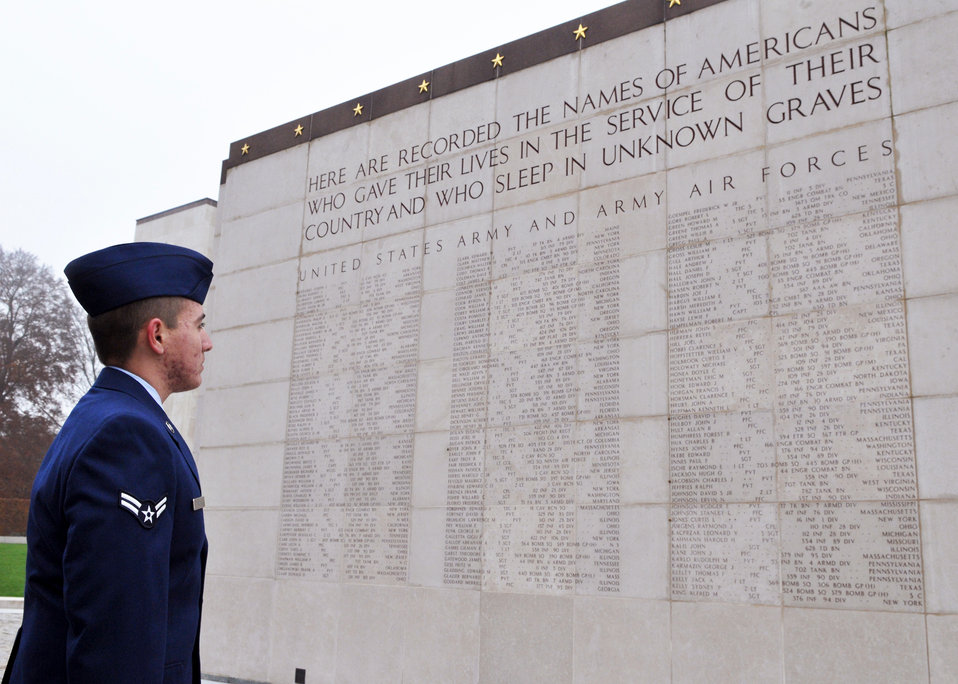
Airmen honor the fallen

Airman 1st Class Michael D. Kimball looks at the names of Americans who died in service of their country at the Luxembourg American Cemetery and Memorial near Luxembourg
City.